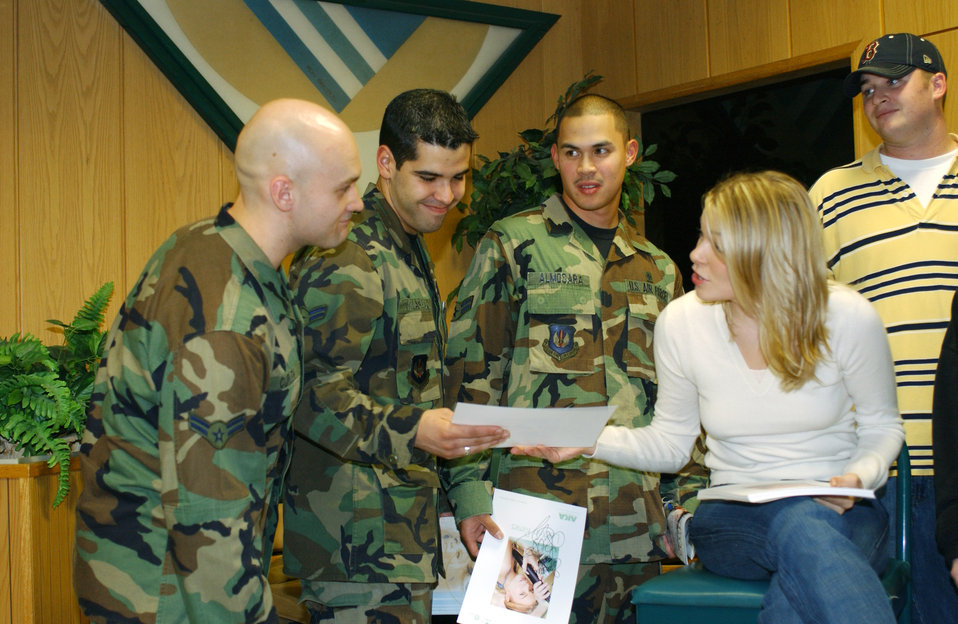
Rimes with Ramstein

RAMSTEIN AIR BASE, Germany -- LeAnn Rimes signs autographs for 86th Maintenance Squadron Airmen. The country/pop singer performed a free concert for Airmen here Sept. 23.